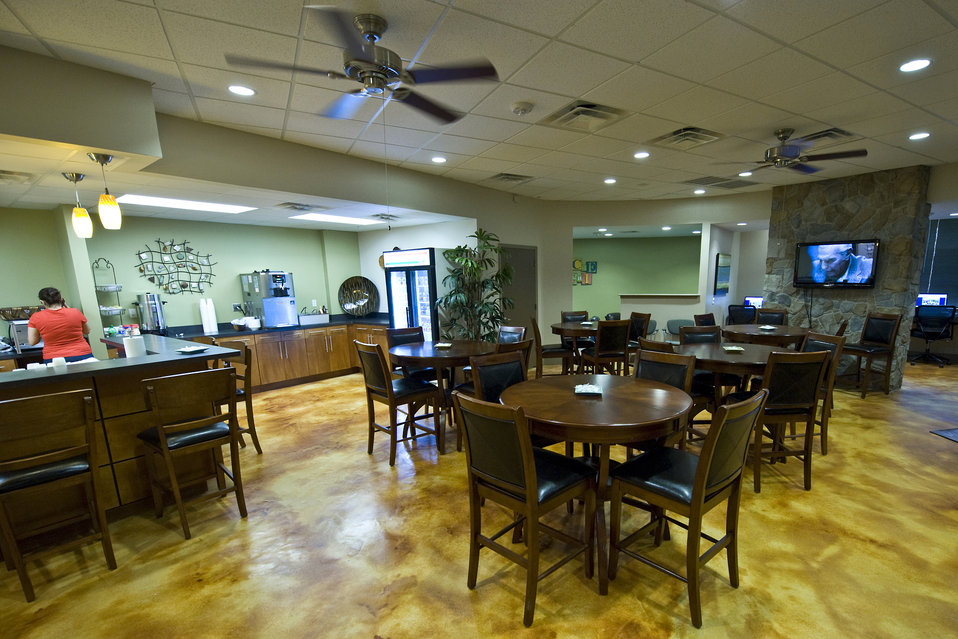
USO reopening in San Antonio

A view of the newly renovated dinning area of the San Antonio River Center USO that reopened Apr. 7, which features a soft-serve ice cream and a sundae bar.